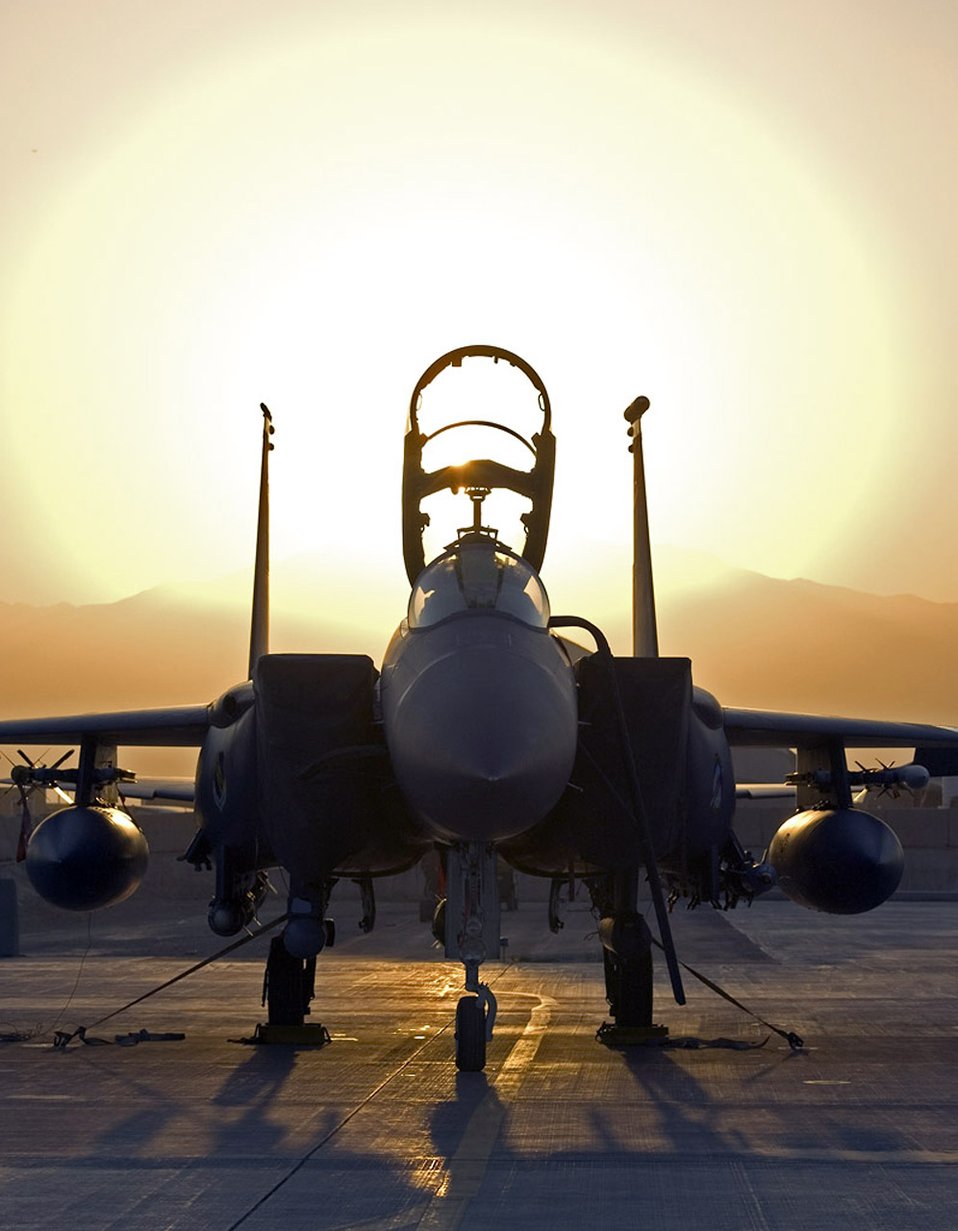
May 21 airpower summary: F-15s provide show of force

An F-15E Strike Eagle sits on the flightline at Bagram Air Base.